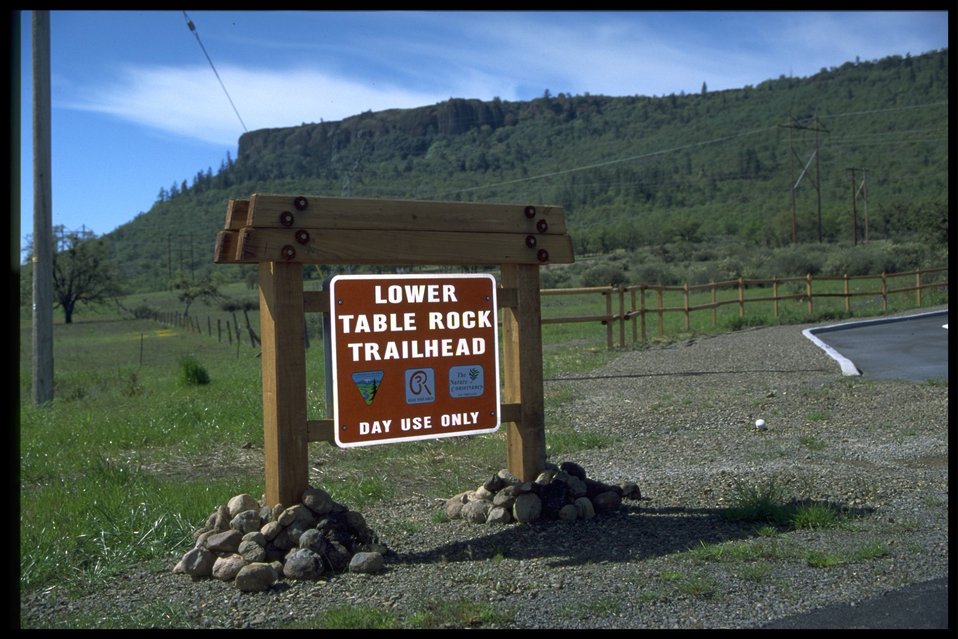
Lower Table Rock trail sign.